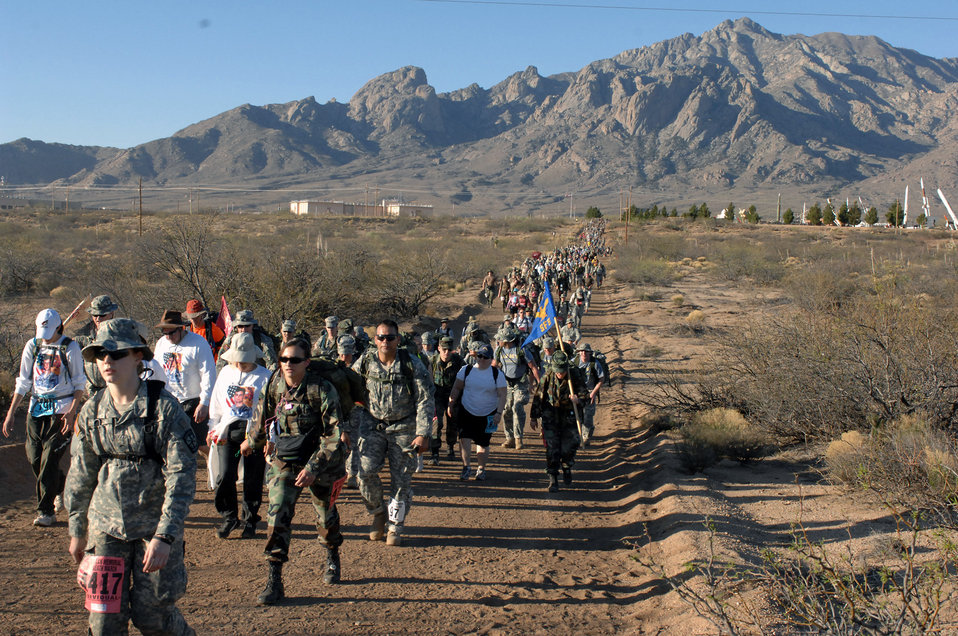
Cannon members march to honor Bataan POWs

The 19th Annual Bataan Memorial Death March paid tribute to the men who died, as well as those who survived the death march and captivity, during World War II, March 30 at White Sands Missile Range, N.M. More than 4,400 military men and women from 50 states, territories and from around the world participated in the 19th annual event.